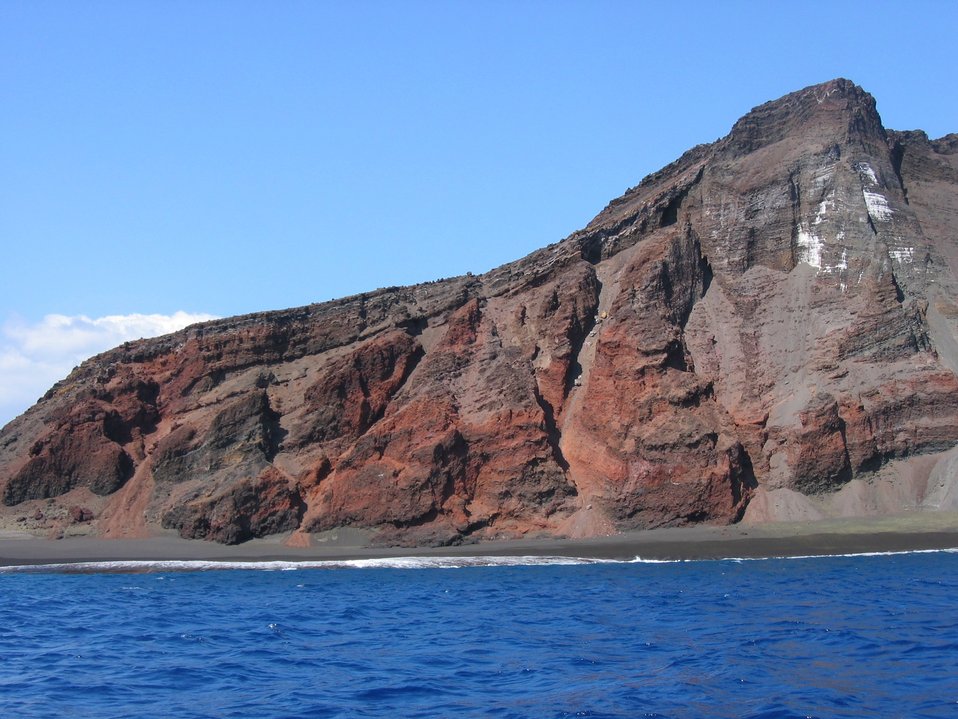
Interior structure of an eroded volcanic cone where it meets the sea.